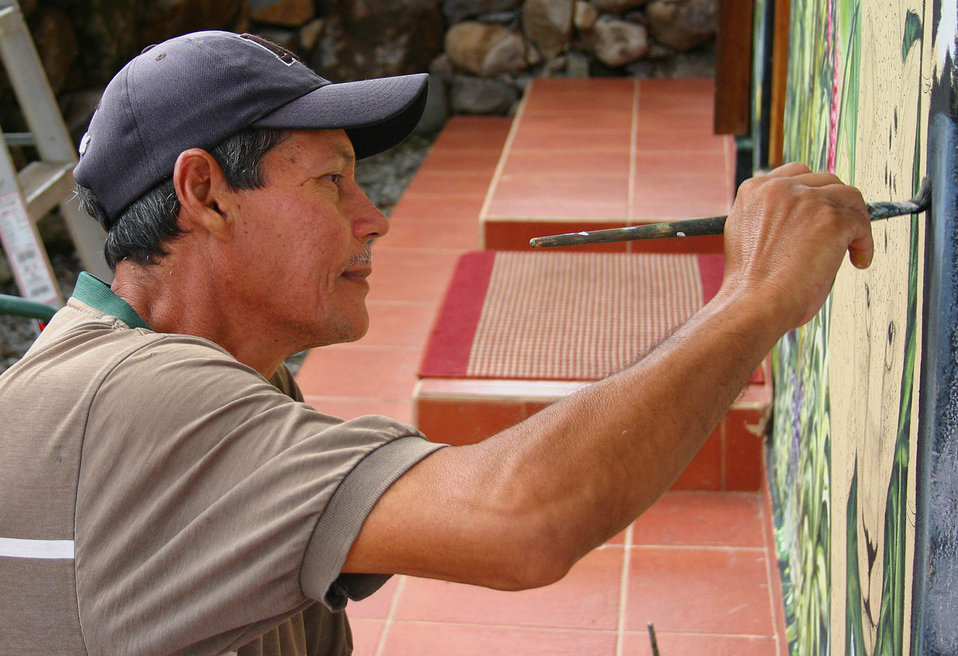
The artist 2

Panamanian artist at work.